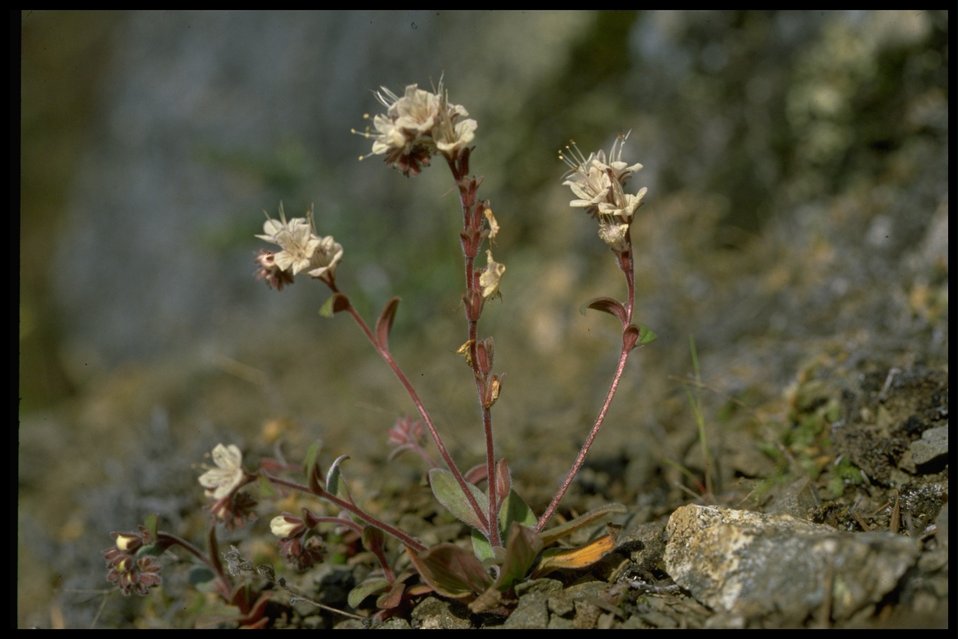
Phacelia verna, commonly known as Umpqua phacelia.